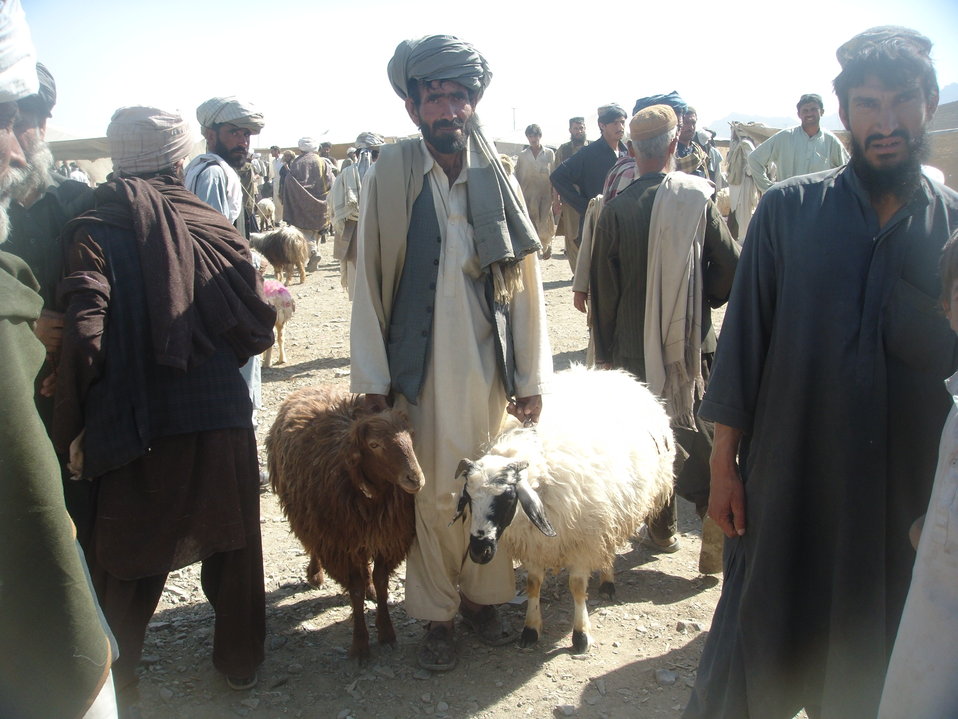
Sellers at the mundi